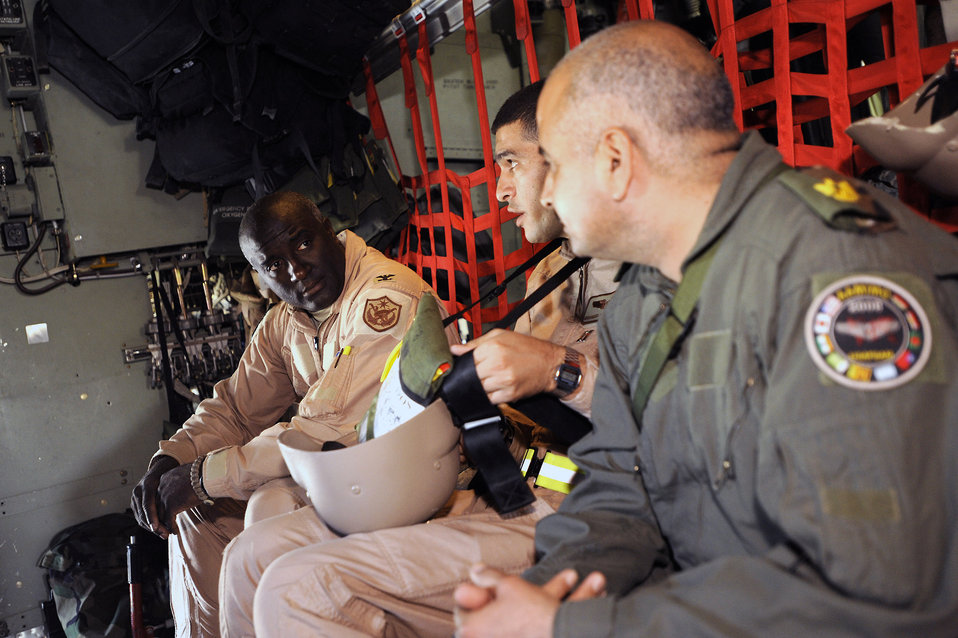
Iraqi doctors study American aeromedical evacuation program

Col. (Dr.) Paul Young converses with Iraqi air force Capt. (Dr.) Mohammed and Iraqi air force Maj. (Dr.) Abdul-Razaq before departing on an aeromedical evacuation mission over Iraq Nov. 7. The two Iraqi doctors from Iraq's Ministry of Defense accompanied the Air Force mission to study aeromedical evacuation procedures so that they can establish an aeromedical evacuation service for the Iraqi air force. Doctor Young, the surgeon general for the Coalition Air Forces Transition Team, is deployed from Ramstein Air Base, Germany.